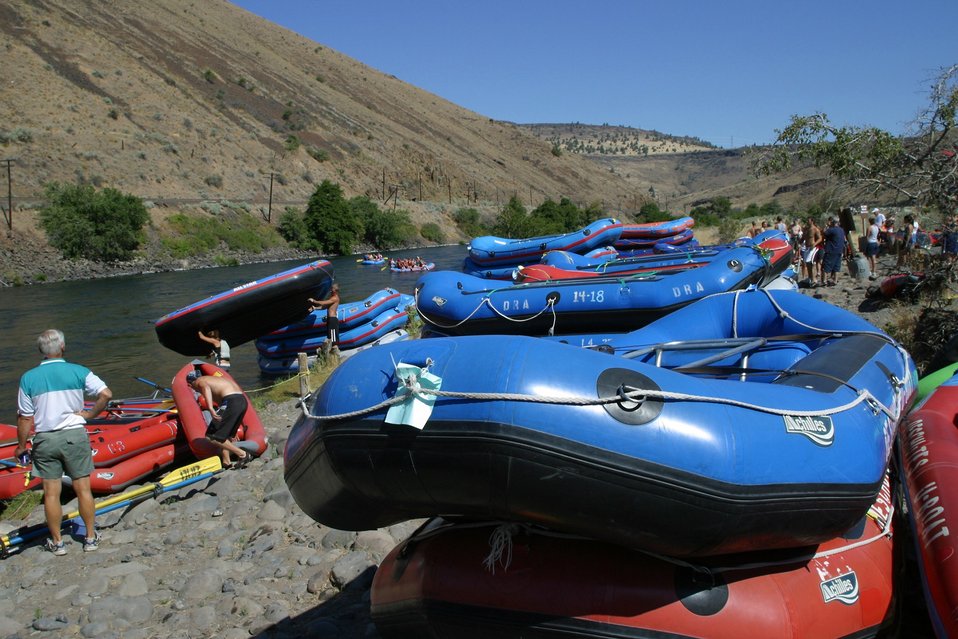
Over 200,000 people a year float the Lower Deshutes River.